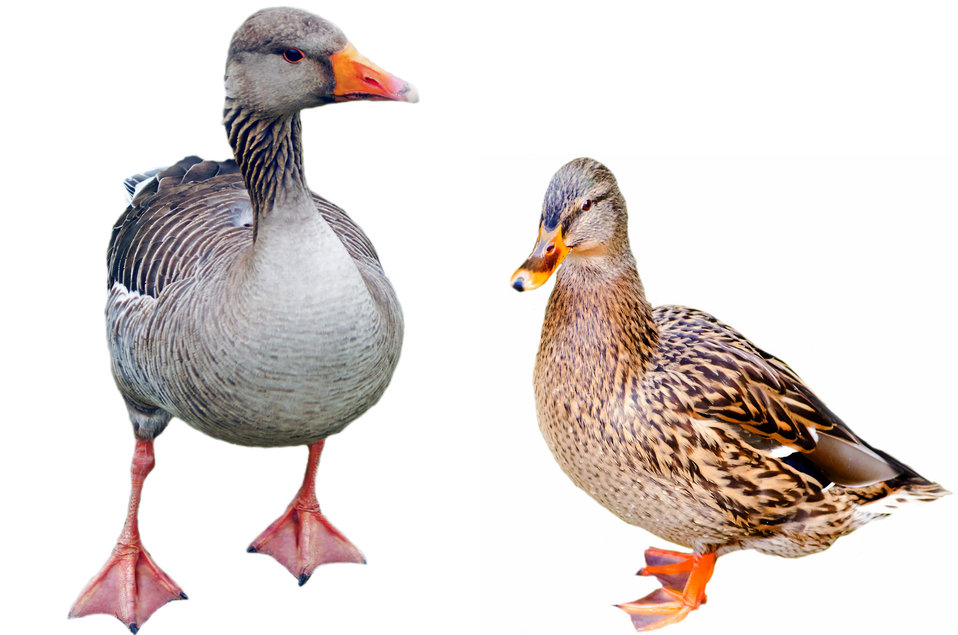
Duck mallard and greylag goose.